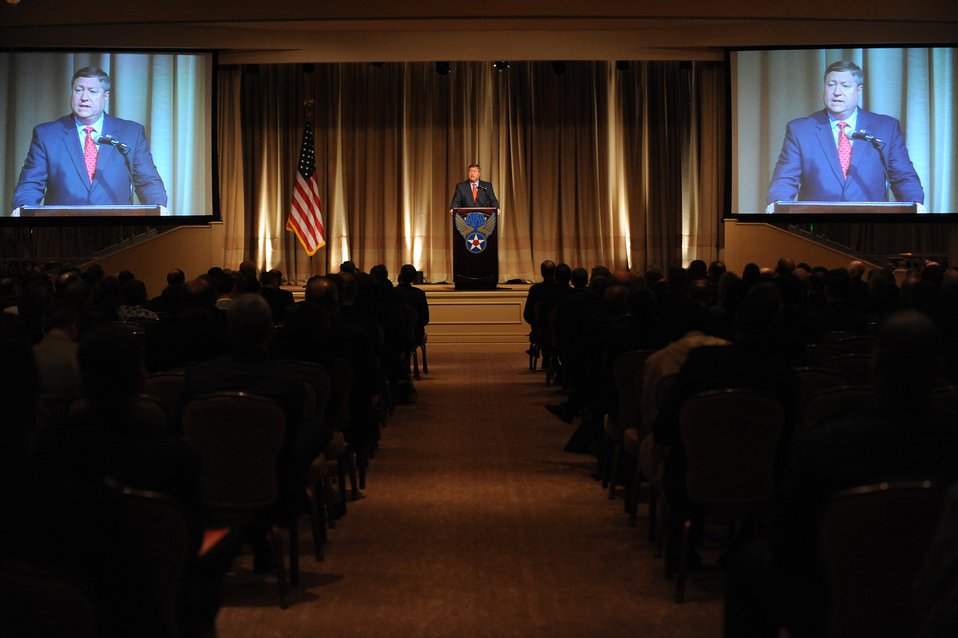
Secretary Donley speaks during Air Force Week Los Angeles

Air Force Secretary Michael B. Donley discusses the Air Force's top priorities and the way ahead for U. S. Space Command and the new Global Strike Command Nov. 21 during the Air Force Association's Global Warfare Symposium. The symposium was the culmination of Air Force Week Los Angeles, an event using various activities and exhibitions to educate the local community about the Air Force's capabilities and missions.